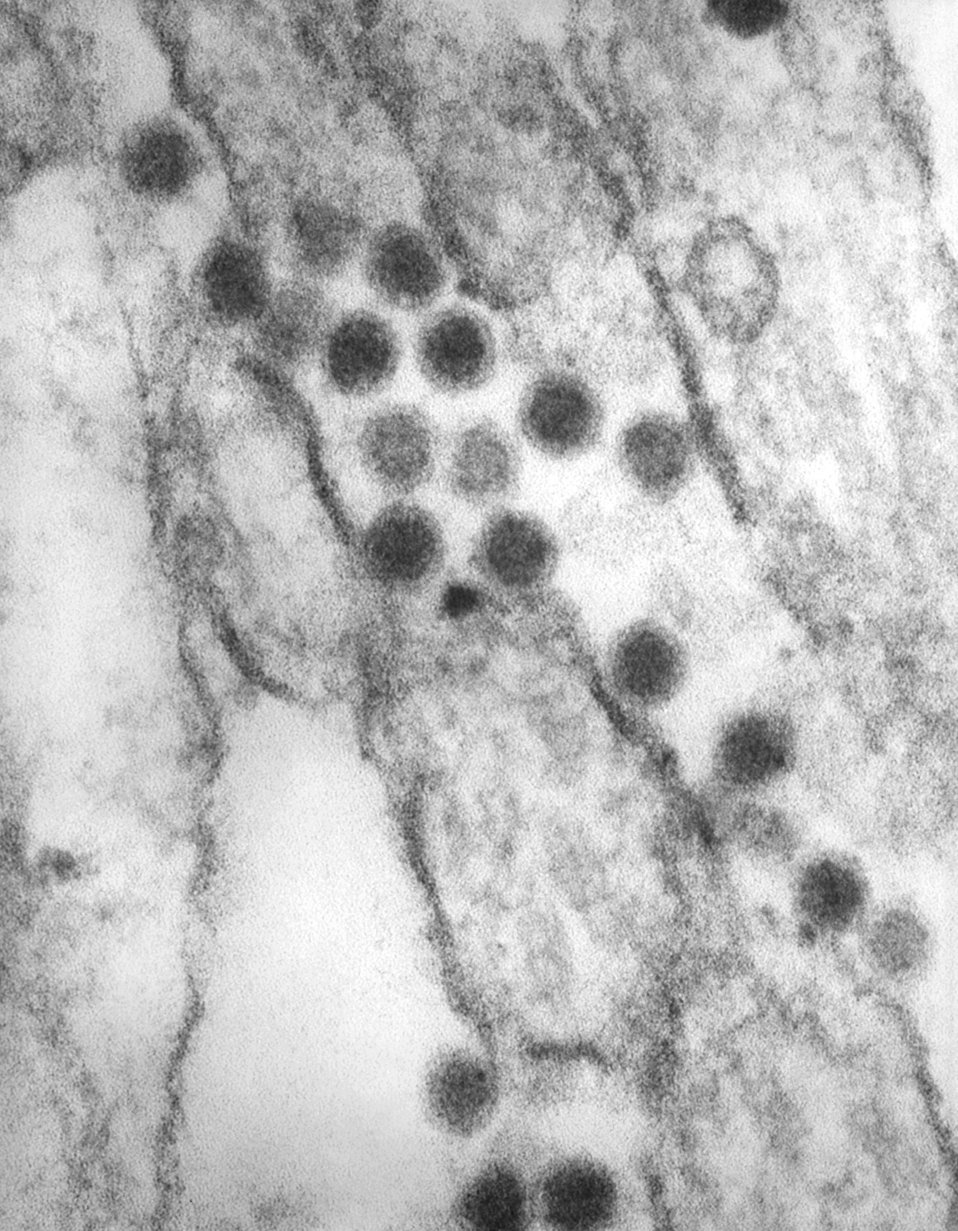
This negatively-stained transmission electron micrograph (TEM) revealed the presence of numerous St. Louis encephalitis virions that were contained within a tissue sample. St. Louis encephalitis (SLE) virus is a member of the genus Flavivirus, family Flaviviridae. Other similar diseases are West Nile virus (WNV), eastern equine encephalitis (EEE), western equine encephalitis (WEE), and La Crosse encephalitis.